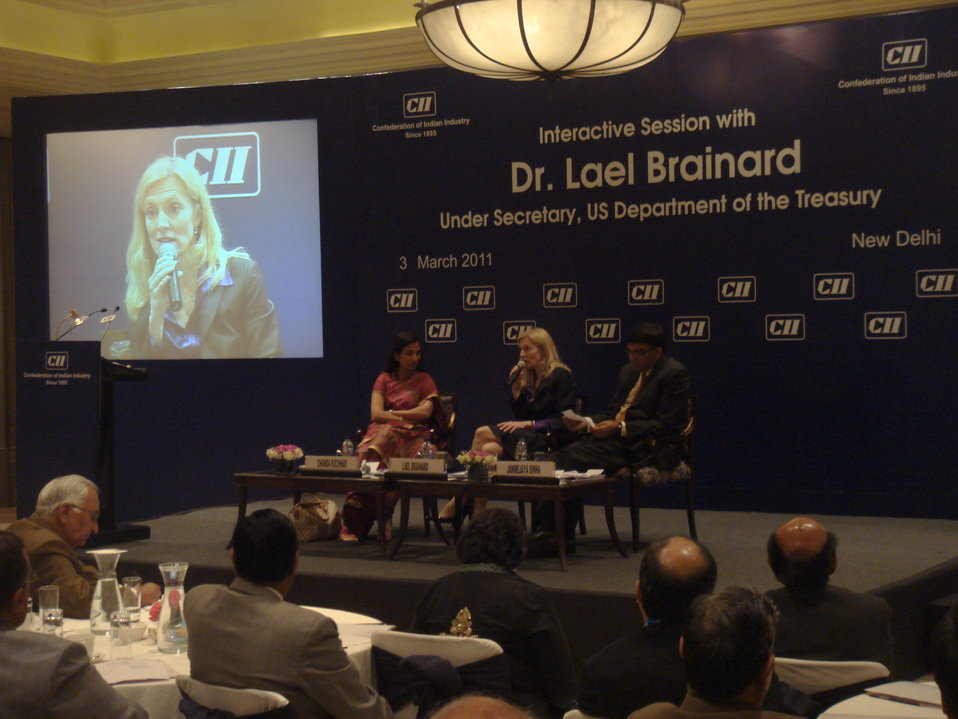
Lael Brainard's Visit to India

Under Secretary Lael Brainard speaking at an event hosted by the Confederation of Indian Industry.